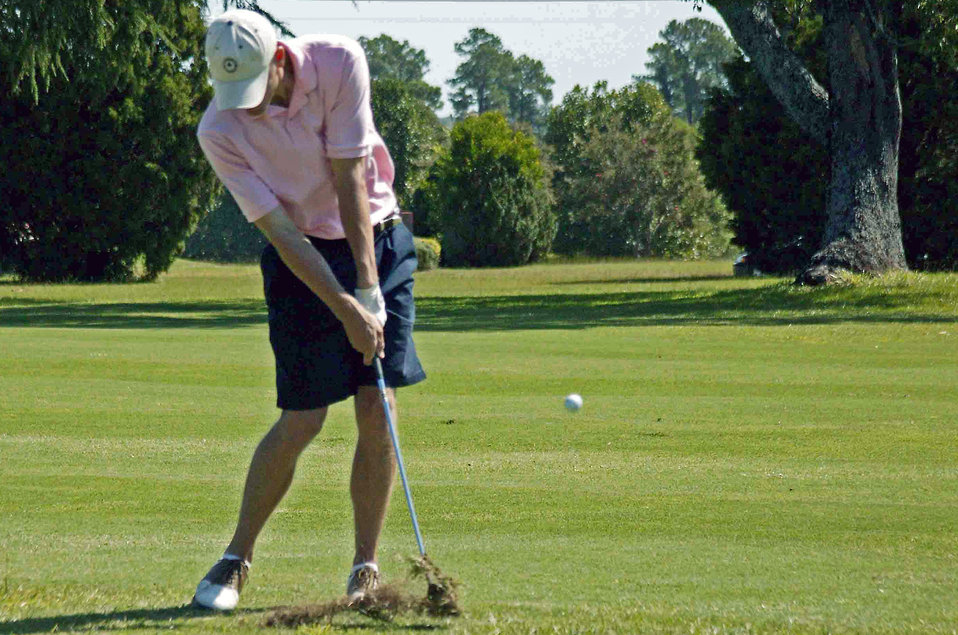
Airmen tee off to represent Air Force

Capt. Geoff Mann takes his second shot on the 10th hole during the All Air Force Training Camp/Championship Sept. 18 at Shaw Air Force Base, S.C. The top six male and top three female finishes moved onto represent the Air Force in the Armed Forces Championship. Captain Mann, from Vandenburg AFB, Calif., made the team.